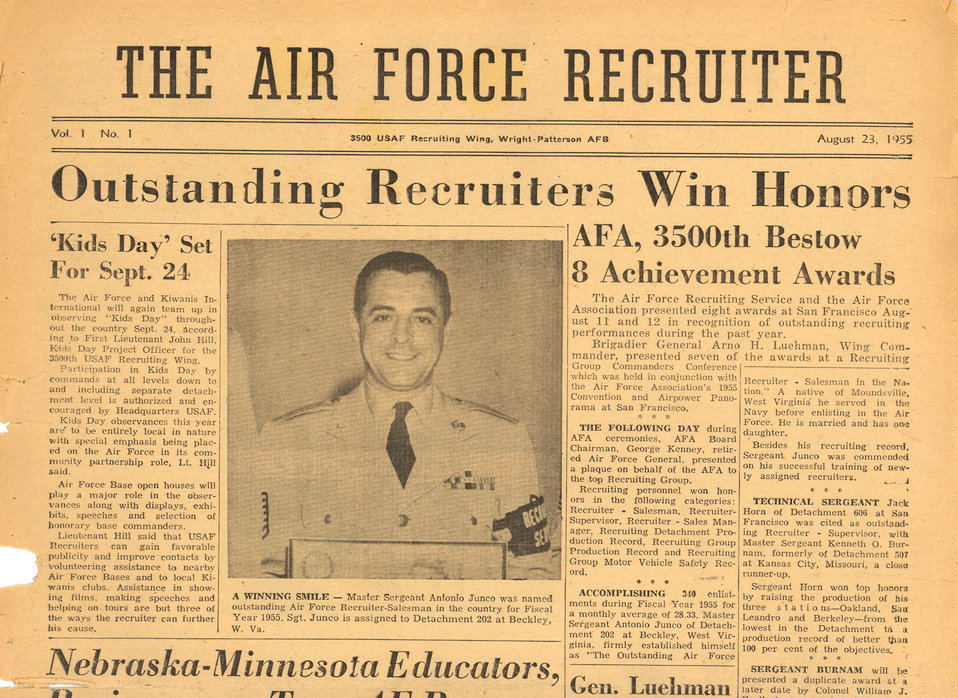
Recruiter magazine bids farewell, goes online

The first edition of The Air Force Recruiter, published Aug. 23, 1955. The publication will no longer be printed and will be available at the Air Force Recruiting Service's Web site.